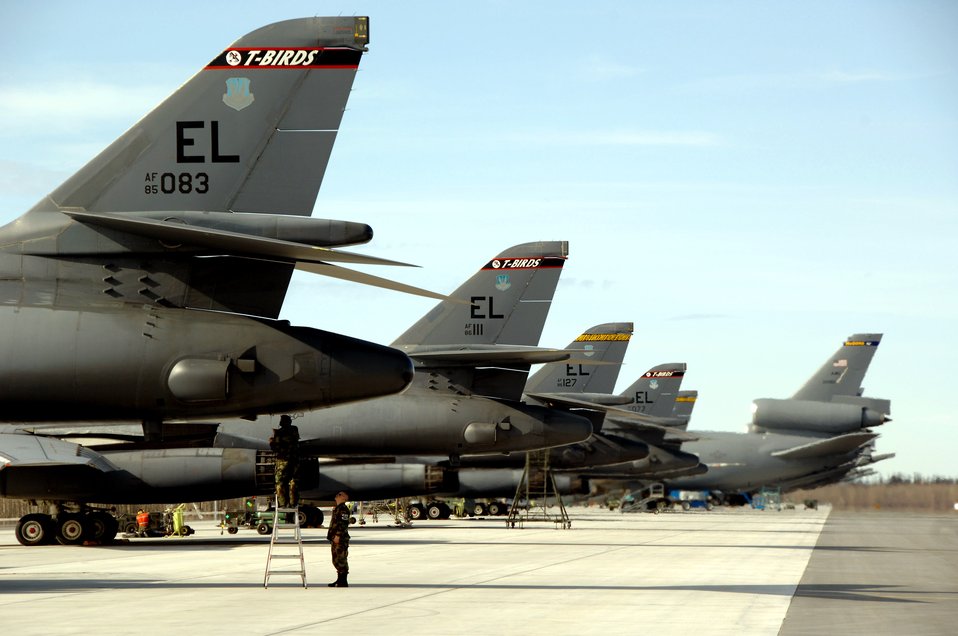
Red Flag-Alaska strengthens coalition forces

B-1B Lancers from Ellsworth Air Force Base, S.D., and KC-10 Extenders from McGuire AFB, N.J., sit on the flightline at Eielson AFB, Alaska, April 9 during Red Flag-Alaska 07-1. Red Flag-Alaska enables aircrews to sharpen their combat skills by flying ten simulated combat sorties in a realistic threat environment. Additionally, the training allows them to exchange tactics, techniques, and procedures and improve interoperability.